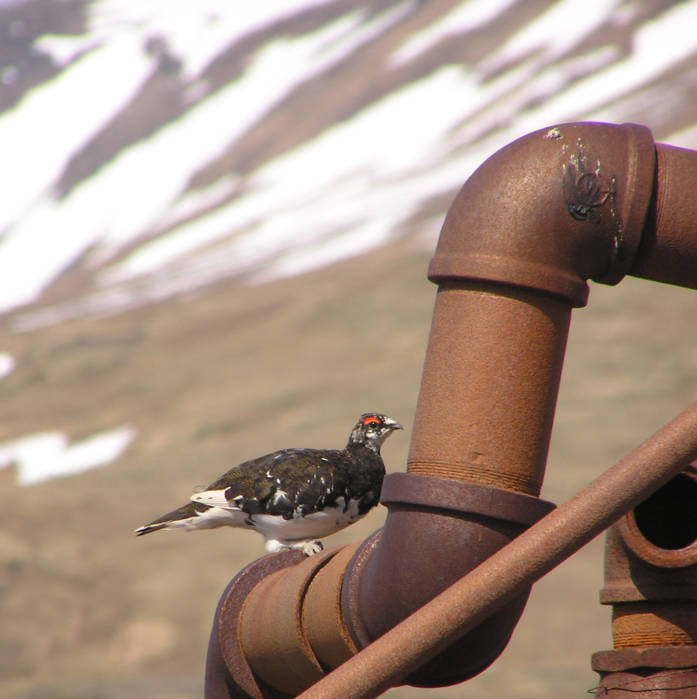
Everman's Rock Ptarmigan